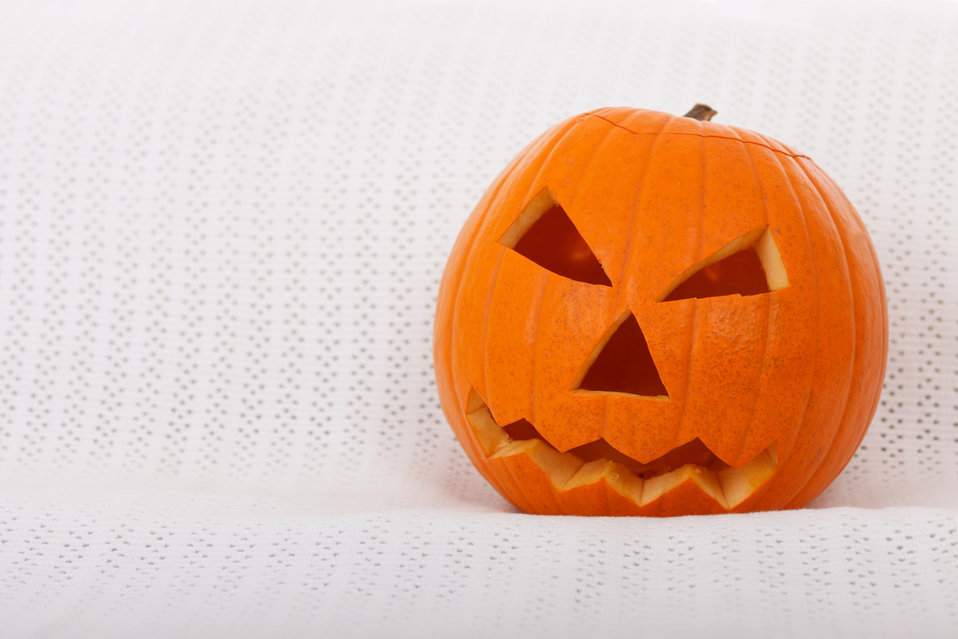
Scary pumpkin

Scary jack-o-lantern pumpkin on white background.